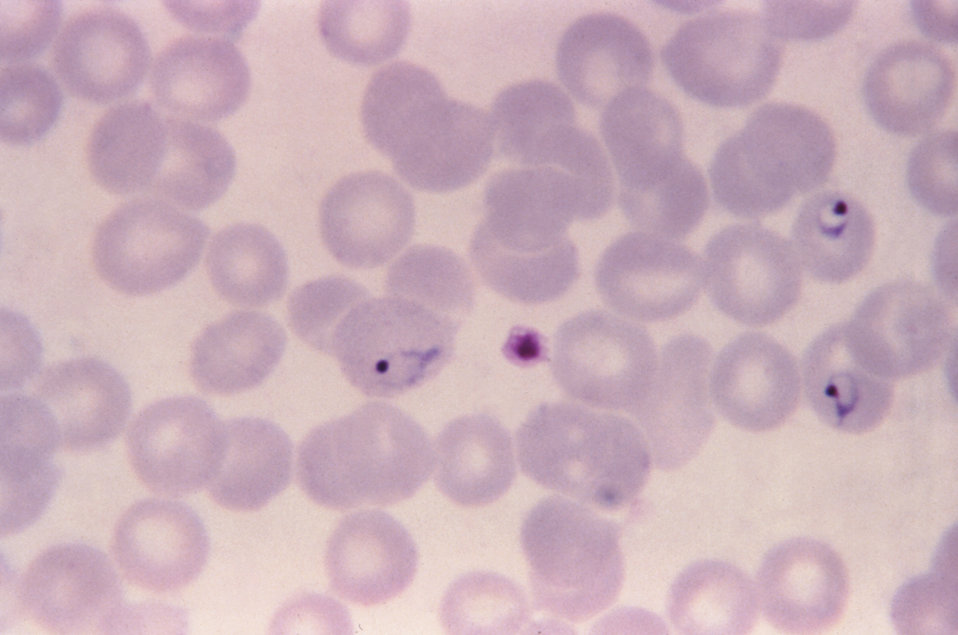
This thin film Giemsa stained micrograph depicts a Plasmodium vivax ring-form trophozoite.